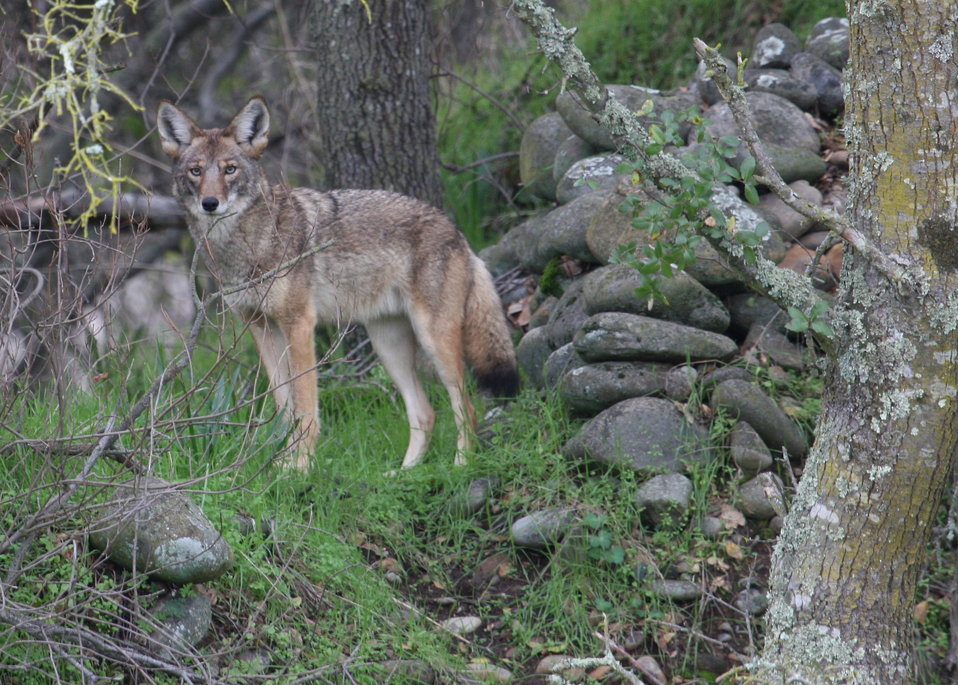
coyote in California